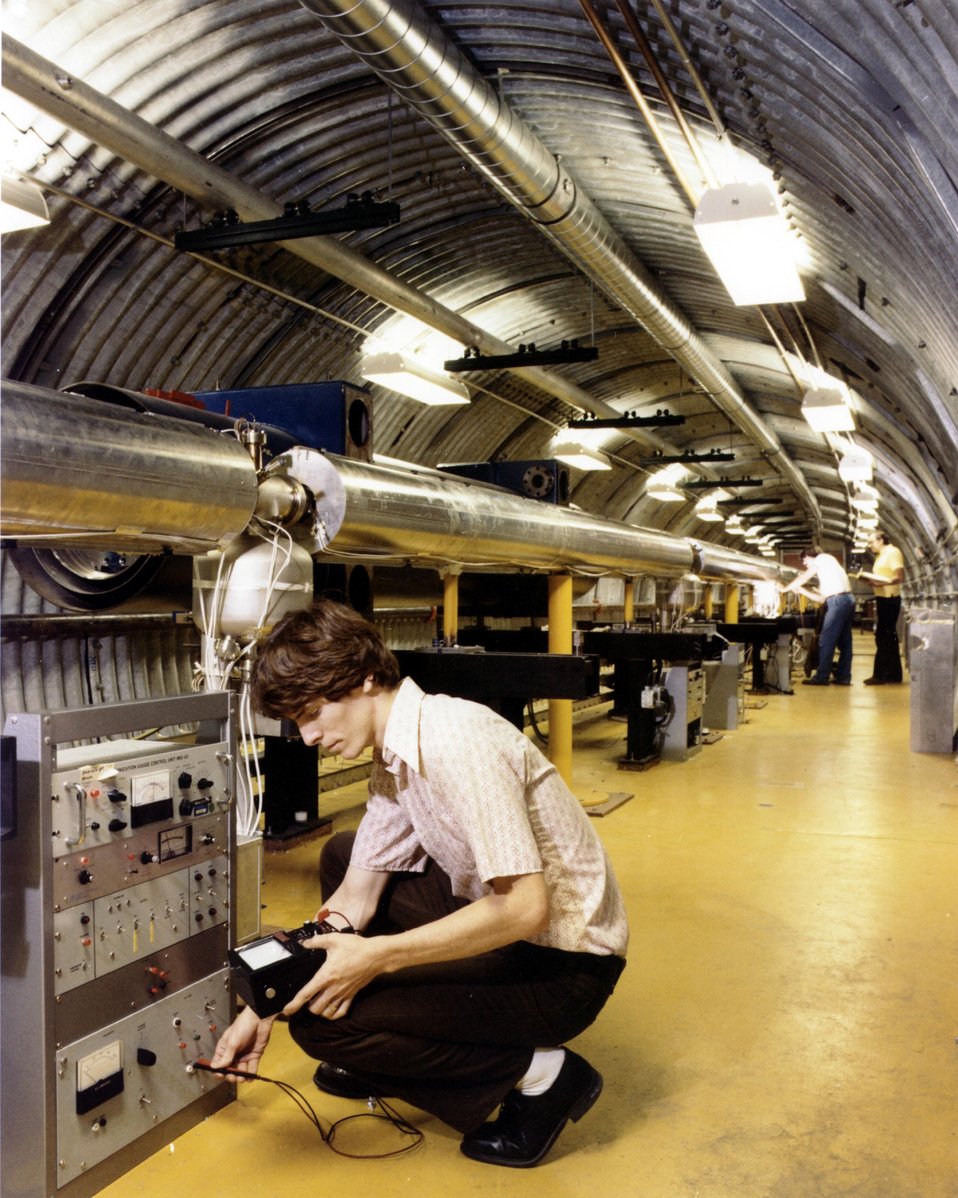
CBA IS A PROTON-PROTON COLLIDING BEAM ACCELERATOR WHICH IS BEING BUILT TO STUDY THE BASIC STRUCTURE OF ENERGY AND MATTER. THE FACILITY ITSELF IS AN UNDERGROUND CIRCULAR TUNNEL, WHICH IS 3.8 KILOMETERS IN CIRCUMFERENCE. TWO RINGS OF SUPERCONDUCTING MAGNETS WILL BE INSIDE THE TUNNEL. PRO- TON BEAMS WILL BE INJECTED INTO THE TUNNEL AND ACCELERATED TO ENERGIES UP TO 400 GEV. AT SIX PLACES ALONG THE TUNNEL, THE BEAMS WILL COLLIDE. EXPERIMENTAL HALLS, WHICH ENCLOSE THESE 6 INTERSECTIONS, WILL HOUSE EQUIPMENT FOR STUDYING THE RESULTS OF THE COLLISIONS.